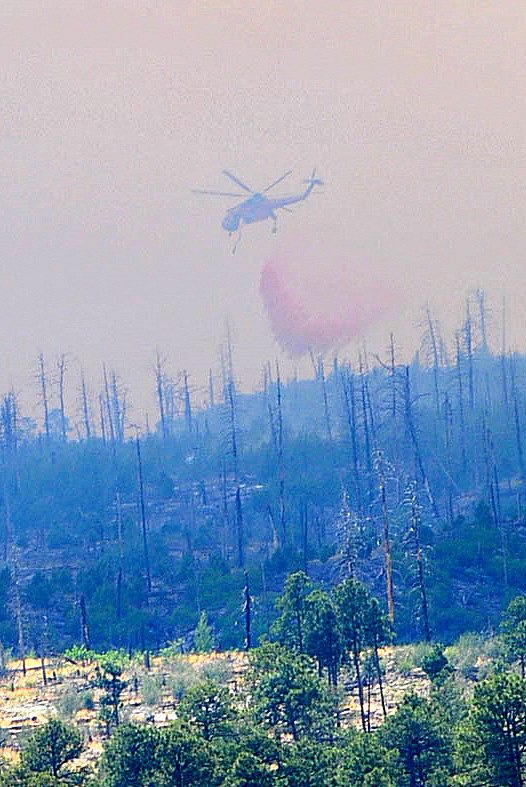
Skydropping fire retardant at Los Alamos.

The Las Conchas Fire started on June 26, 2011, it was caused by a fallen tree that caught fire after it came in contact with power lines nearby. The fire had burned over 121,000 acres, including 63 residences. At no time were hazardous materials in danger at Los Alamos National Laboratory. The lab was closed for a week and reopened on July 6th.